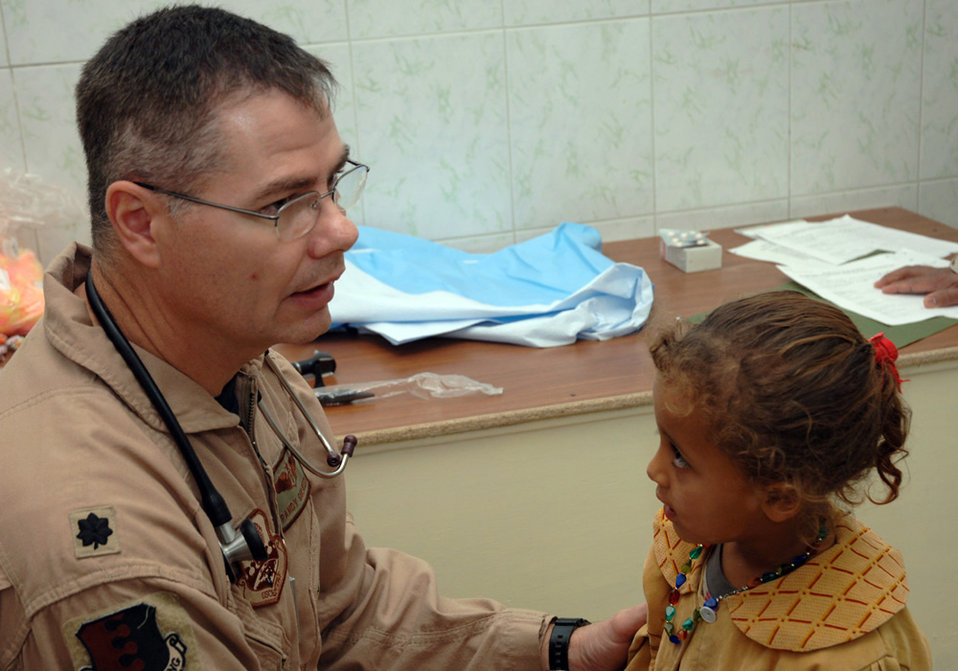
Baghdad clinic

BAGHDAD, Iraq (AFPN) -- Lt. Col. (Dr.) Randy Guliuzza examines a little girl in a clinic here. The colonel is the 447th chief of aerospace medicine.